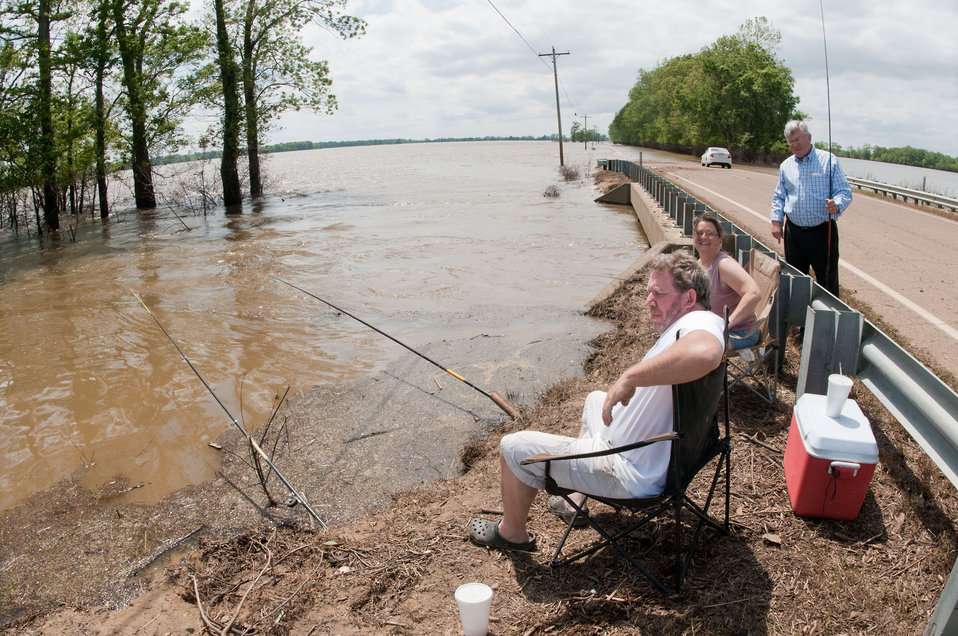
David and Nona Rodenhouser relax in folding chairs and try their luck fishing the flooded farmland off of highway 88 near Porter’s Gap Rd. that is several feet deep on Saturday, May 21, 2011.